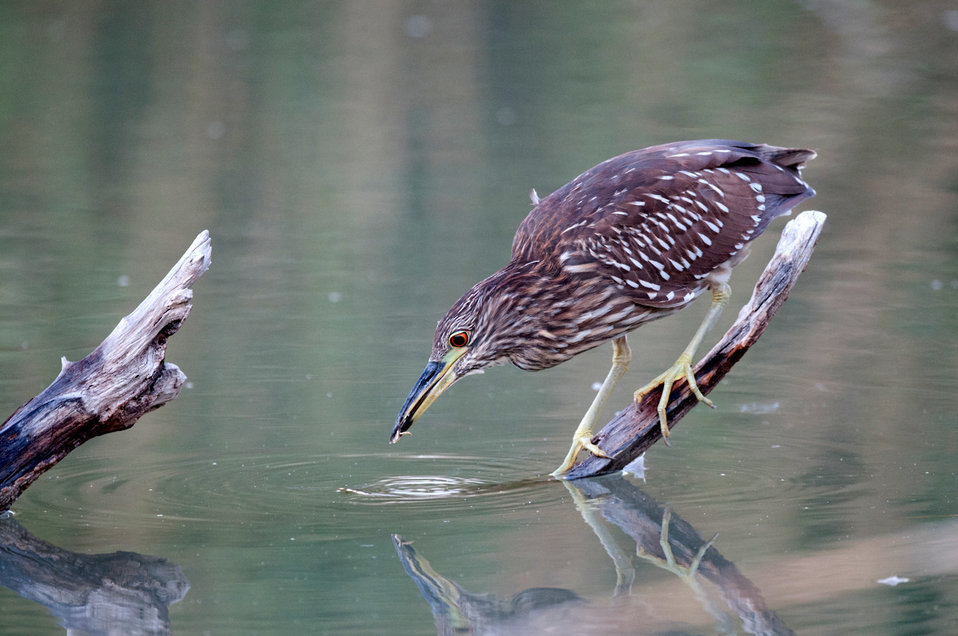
Black-crowned Night Heron Fishing

Photographed in Charlestown, RI.